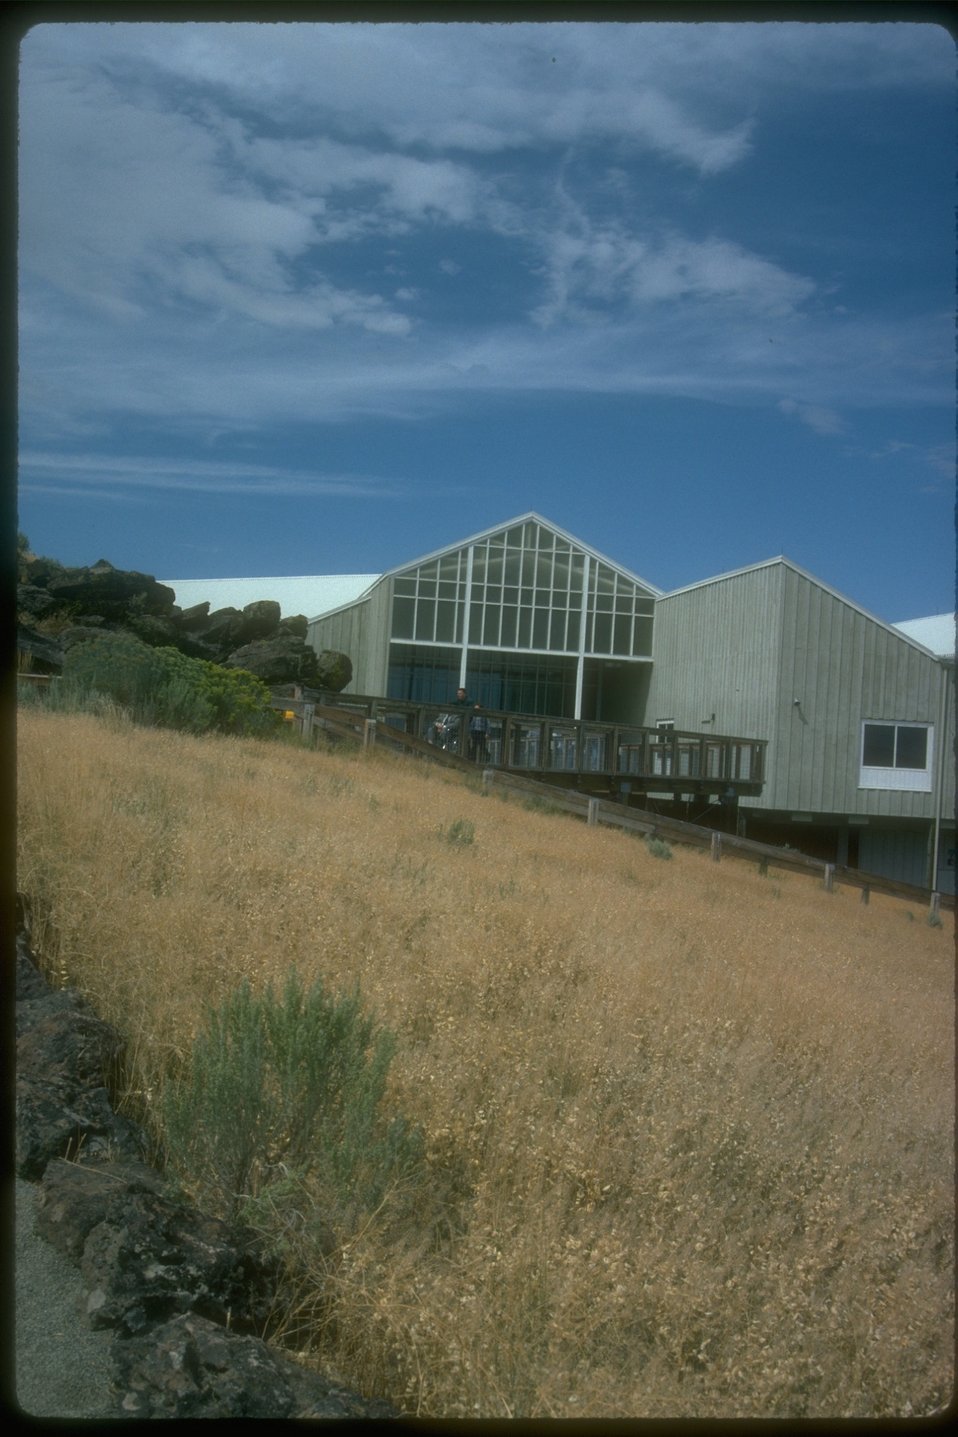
The entrance of the Interpretive Center building from a distance.